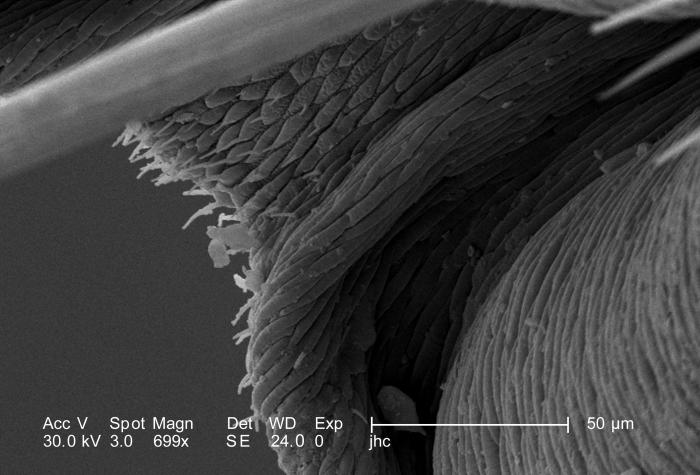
This scanning electron micrograph (SEM) is the fourth in a series of five PHIL images, 10106, 10107, 10108, 10109, and 10110, depicting the distalmost exoskeletal morphology found on one of the six legs of an unidentified hornet found in the suburbs of Decatur, Georgia. Under a magnification of 699X, what this SEM reveals is the anatomical configuration of what is termed the leg's 'pretarsus' or 'claw', but in particular the 'arolium', which is centered between the two distal claws.The insect leg is usually composed of six segments: the proximal 'coxa', which attaches the leg to the thorax, followed distally by the leg's trochanter, femur, tibia, tarsus, and pretarsus, which in some insects, as is the case of this hornet, is in the form of a 'claw'.